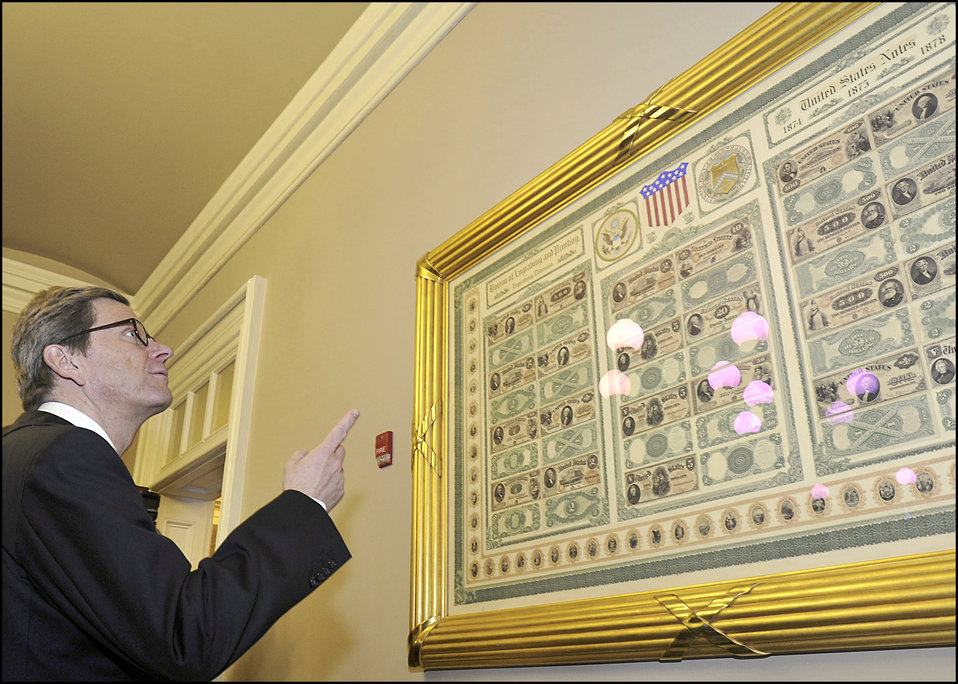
Secretary Geithner Meets with German Foreign Minister Guido Westerwelle

German Foreign Minister Guido Westerwelle looks at old United States Treasury Notes before a meeting with Treasury Secretary Tim Geithner at the Treasury Department on January 20, 2012.